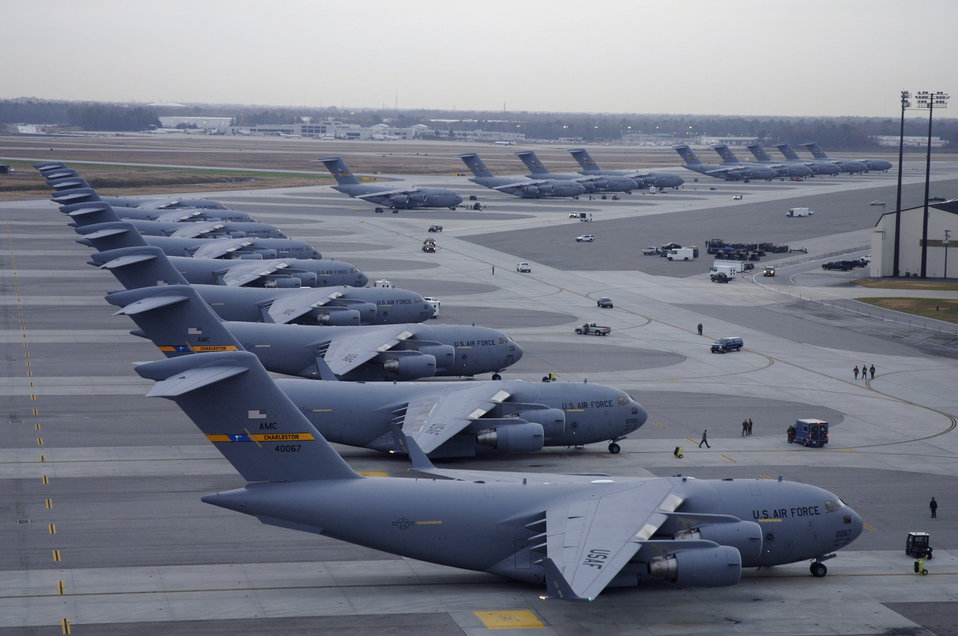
CENTAF Airpower Summary for Apr 2, 2007

C-17 Globemaster IIIs, like these, provide intra-theater heavy airlift support, helping to sustain operations throughout Afghanistan, Iraq and the Horn of Africa.